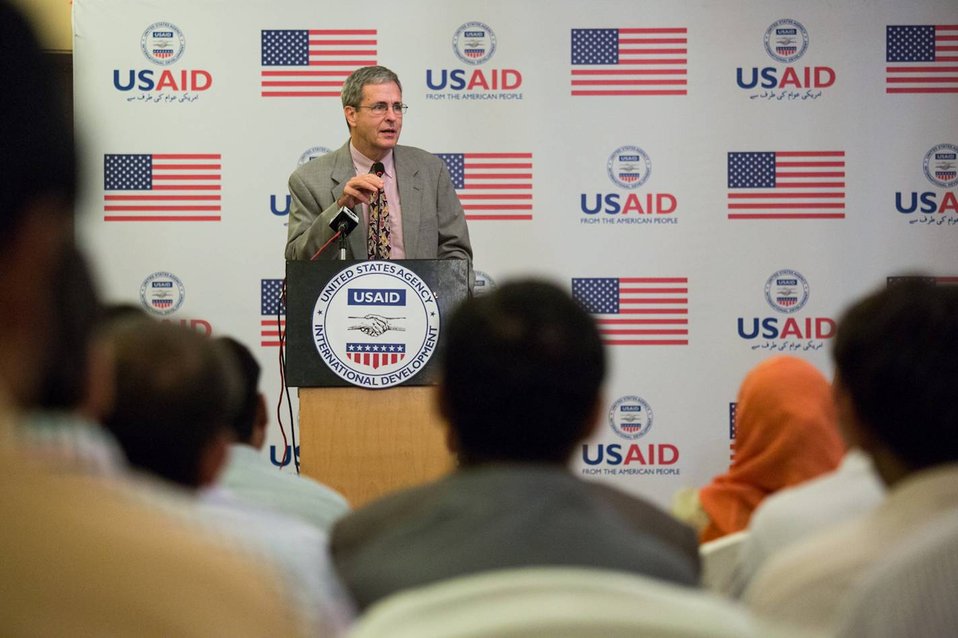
Islamabad, September 26 2012 - Jonathan Conly, USAID Pakistan Mission Director, speaking to the participants of the training program.